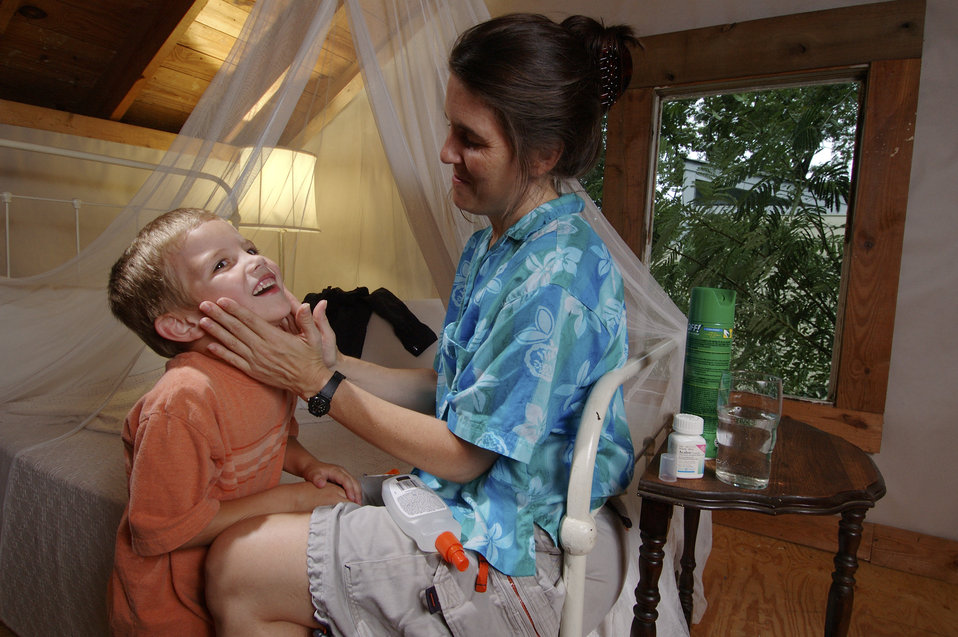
This photograph showed a mother applying mosquito repellent her child's skin in order to prevent mosquitoes from biting, thereby, preventing many arboviral, infections such as West Nile virus.